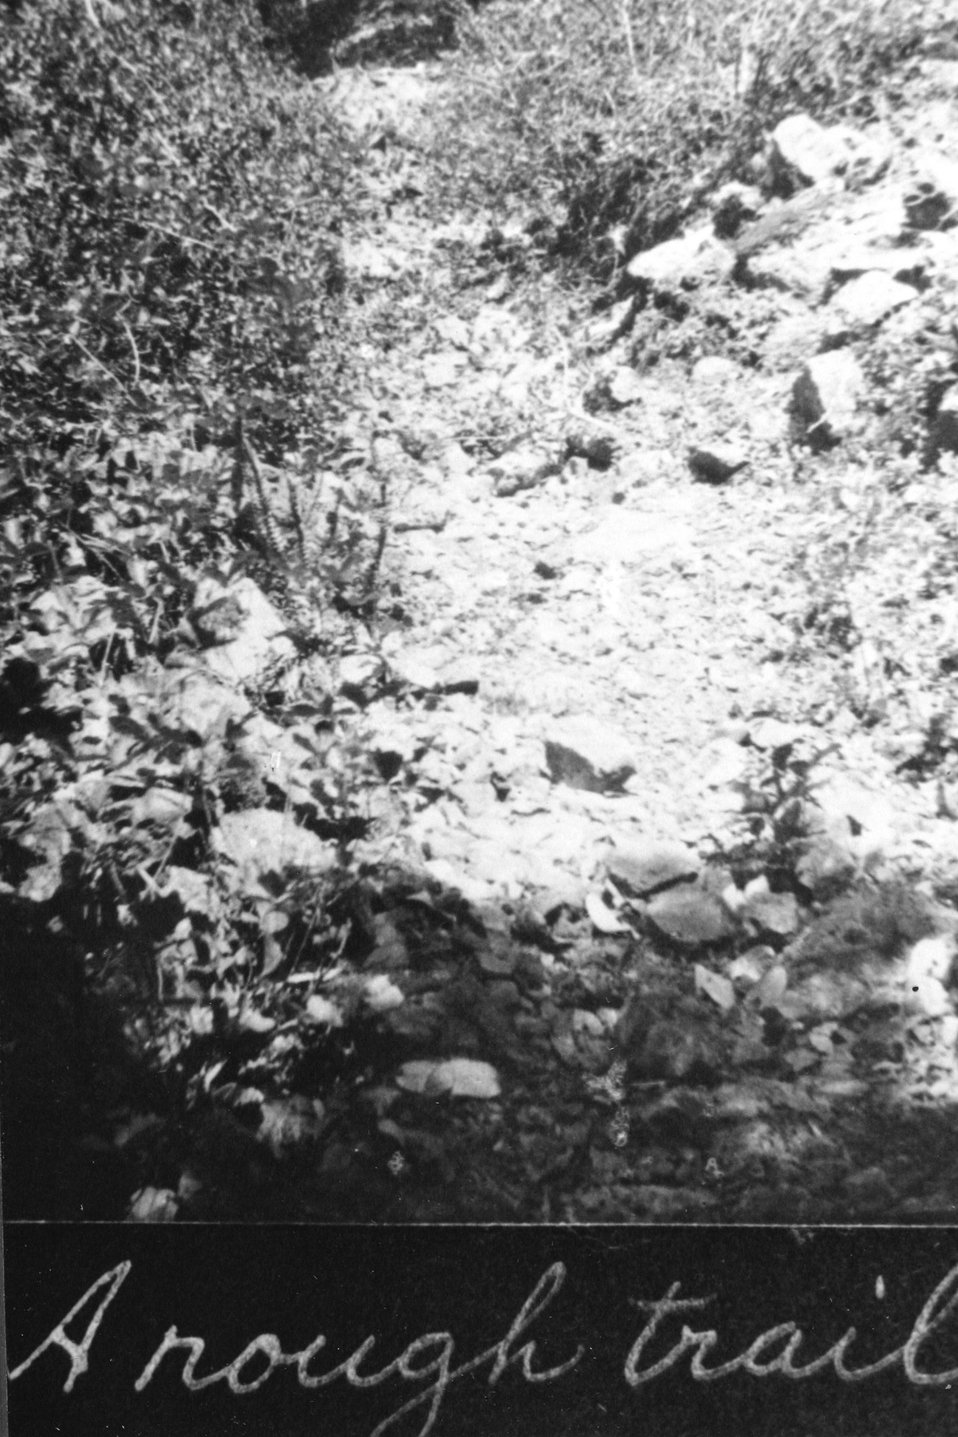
A rough Mule Creek trail.